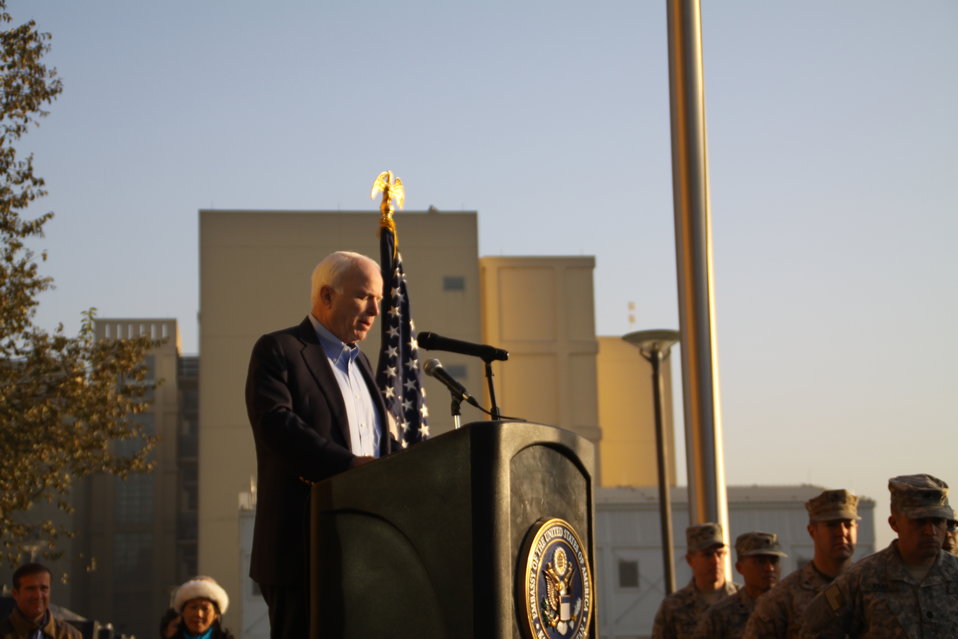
Senator McCain